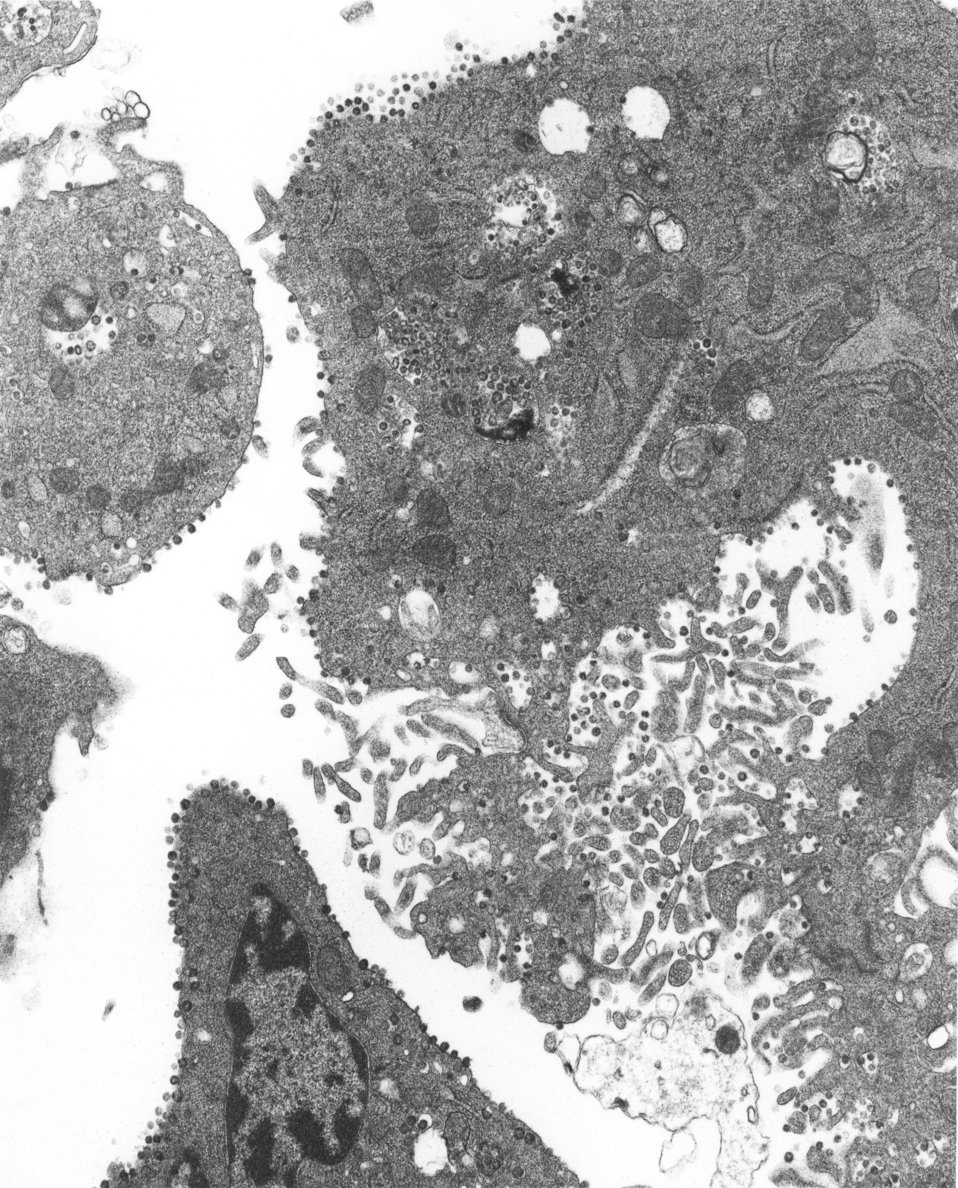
Coronaviruses are a group of viruses that have a halo or crown-like (corona) appearance when viewed under a microscope.